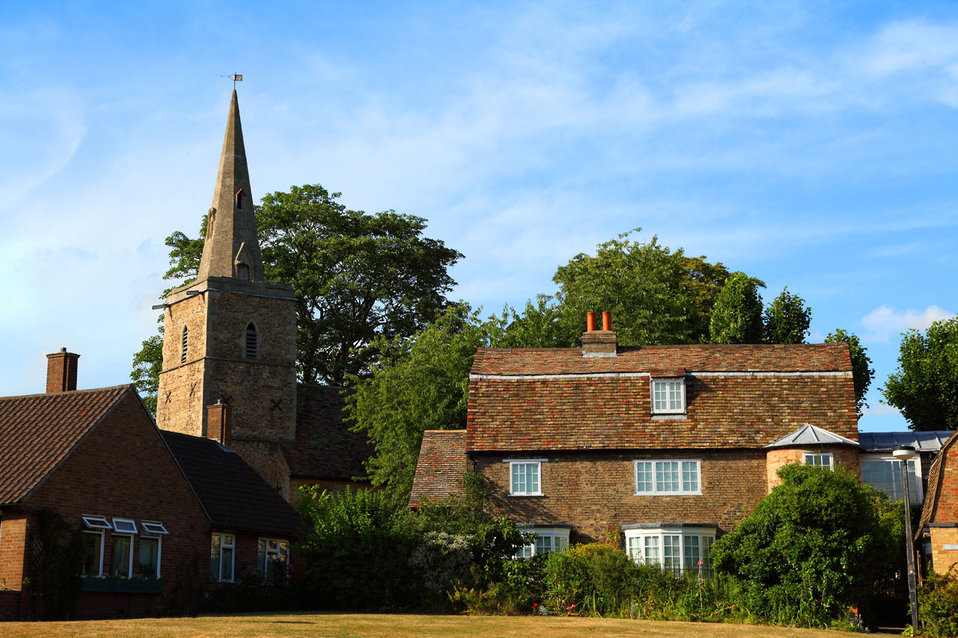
British village architecture

Houses and stone church in one small british village.